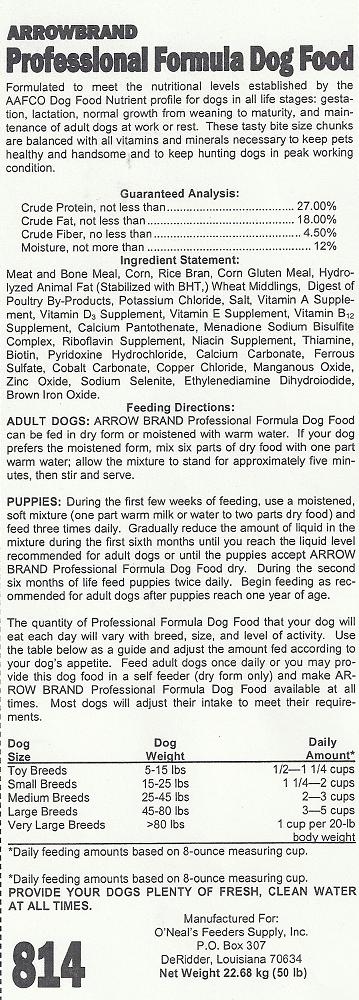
RECALLED - Dry dog food

December 13, 2011 - O’Neal’s Feeders Supply, Inc. Recalls Arrow Brand Dry Dog Food.